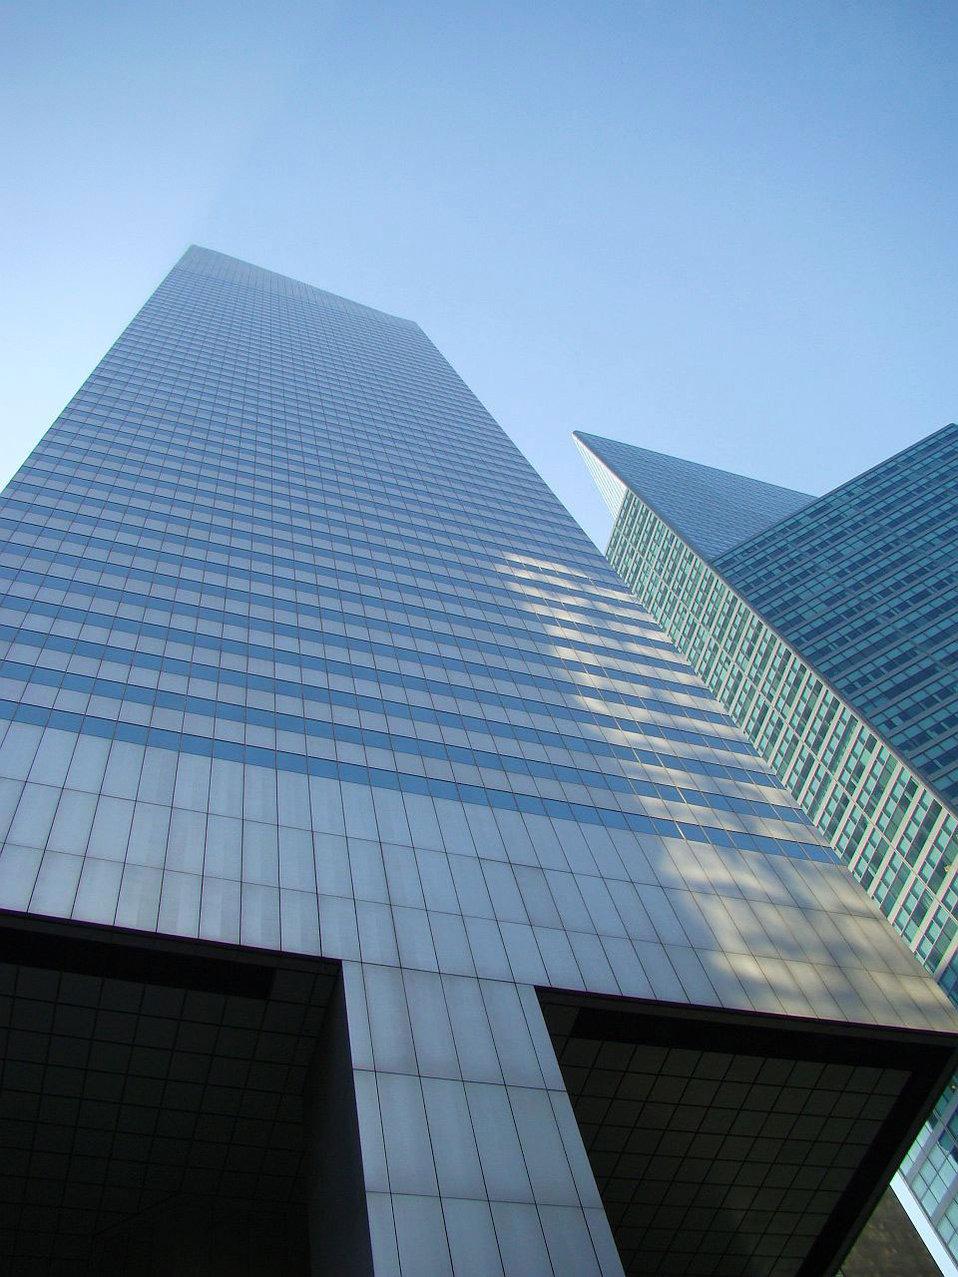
Skyscraper

Citicorp tower in nyc seen from street level.